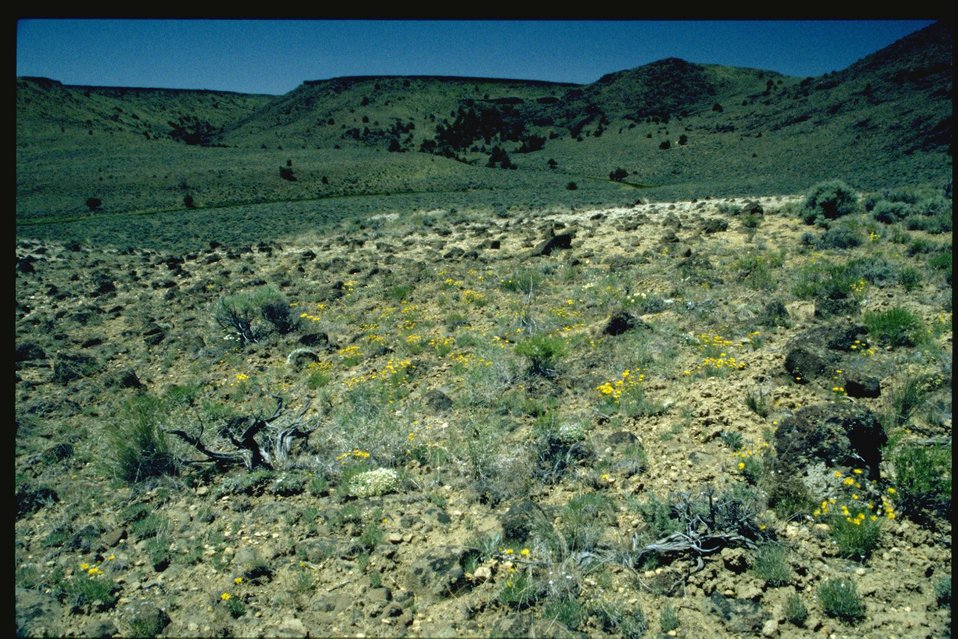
Scenic view of Guano Creek.